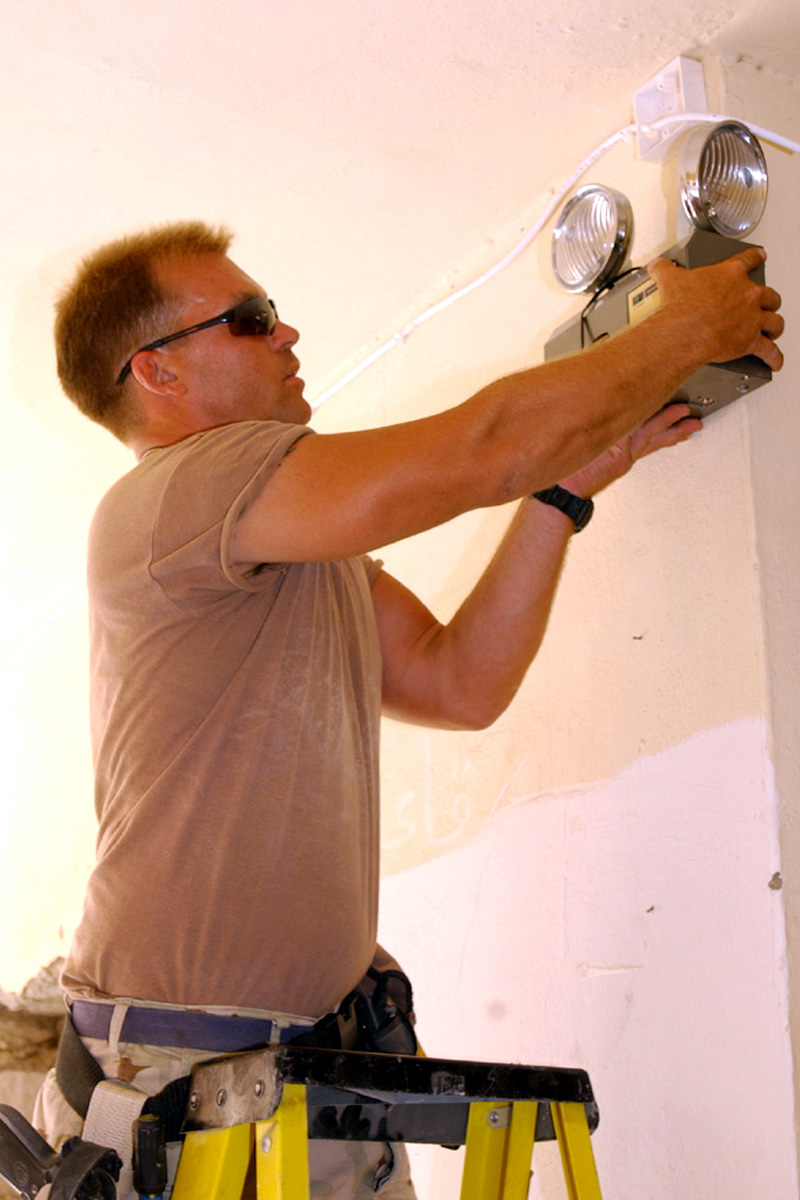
Getting schools ready

KIRKUK, Iraq (AFPN) -- Tech. Sgt. Jack Vollreide installs safety lights at a local school here. Air Force electricians are volunteering their time to make the schools ready for the upcoming year. Vollreide is assigned to the 506th Expeditionary Civil Engineer Squadron at Kirkuk Air Base, Iraq.